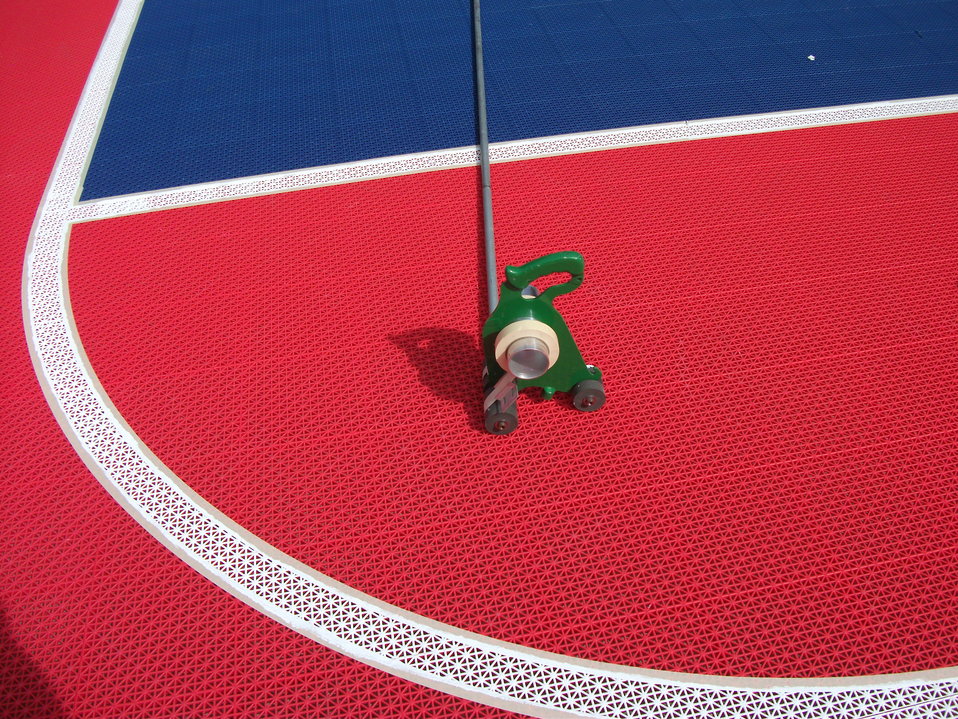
A charity paid $22,000 to install these tiles on the basketball court in Crombie Park near the corner of Berkeley and the Esplanade. The device here is a large compass. At the business end there were two rollers, that dispensed masking tape. It is designed to lay out parallel strips of masking tape to enable painting curved arcs of circles. The individual tiles lock together and are then screwed down. This design allows for damaged tiles to be replaced, restoring the whole surface, as good as new. The tiles were extensively damaged in July 2013 when a special anti-drug police team, chasing a drug suspect, drove onto the court, and couldn't get out. About 40 percent of the tiles were torn up through the police officer's fruitless brute force attempts to jump a curb that, in the light of day, was too high to jump. Embarrassed off-duty police officers, and their supporters, removed all the tiles the next day, rather merely salvaging the serviceable tiles, and replacing the broken ones.